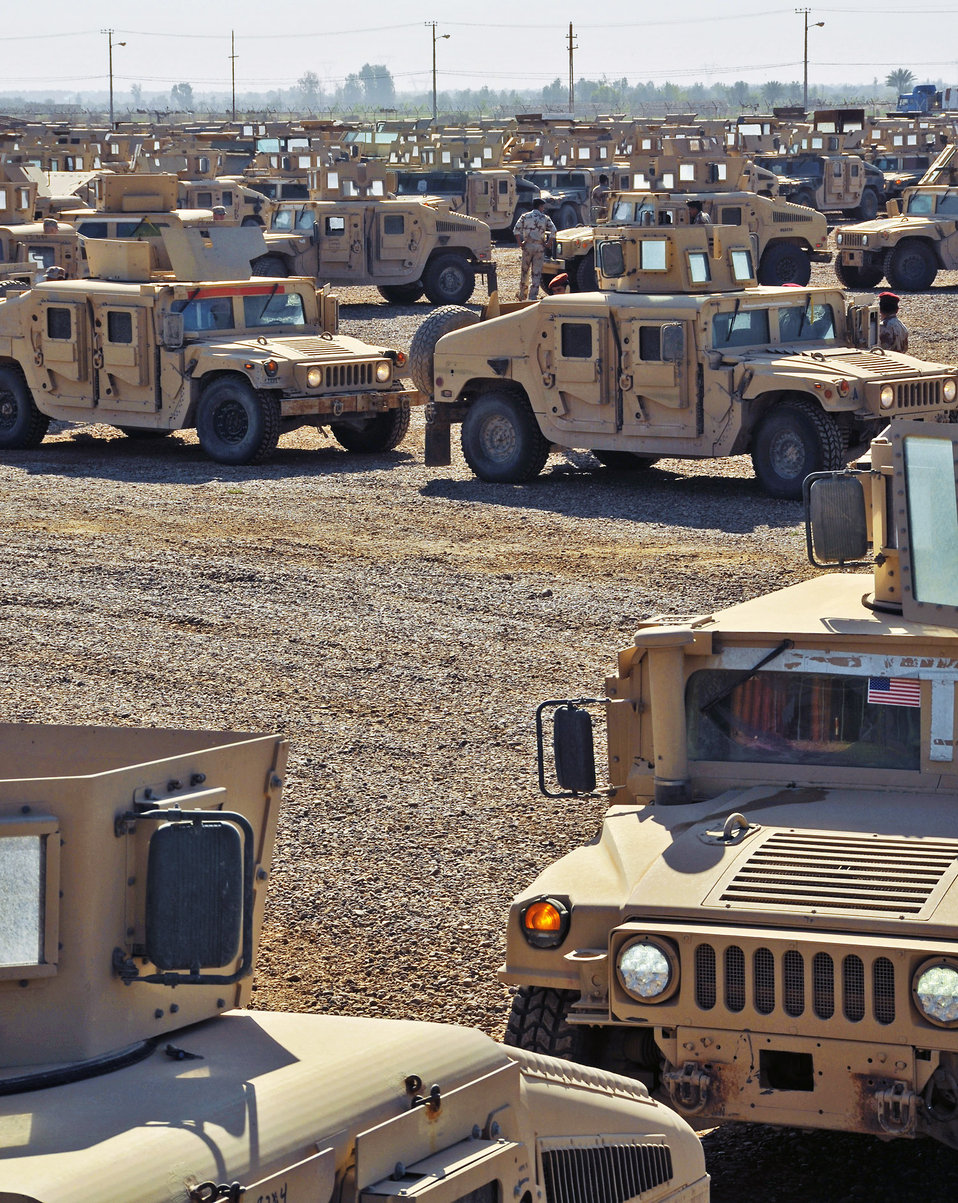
Airmen distribute Humvees to Iraqi forces

U.S. and Iraqi army soldiers drive M1114 Humvees to the Iraqi-run section of the camp for processing in March at Camp Taji, Iraq. The soldiers work with the Taji Redistribution Property Assistance Team to process M1114 up-armored Humvees that will be sold to the Iraqi government. The Humveess will later be distributed to Iraqi army and police for use during day-to-day operations.